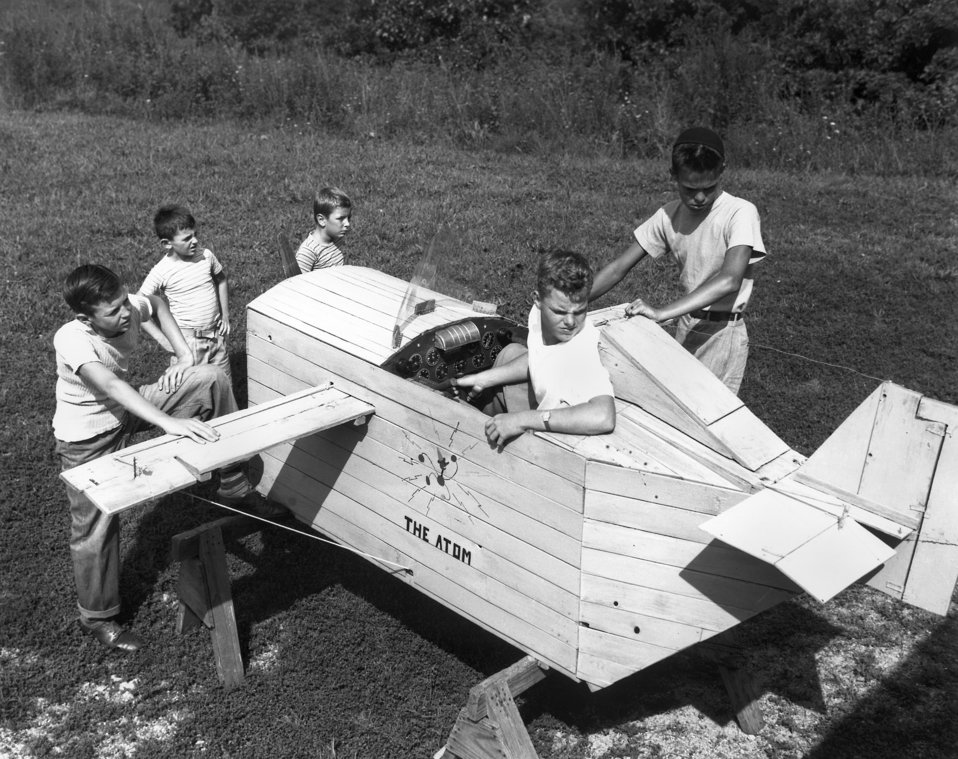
Link Trainer Oak Ridge

1122 DOE photo by Ed Westcott

Link TrainerOak Ridge Tennessee 9-1945